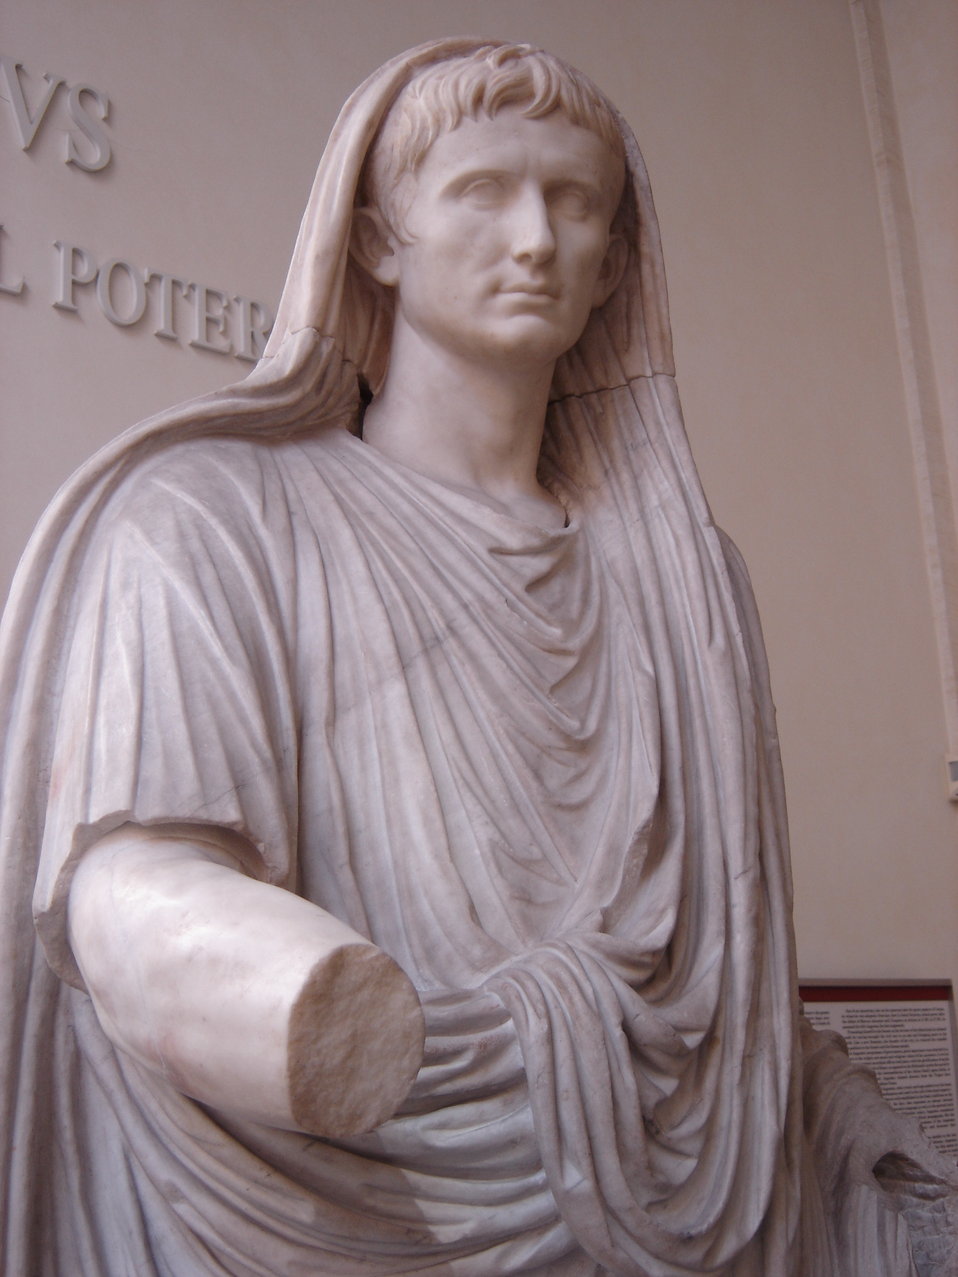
Took this photo myself. en:Category:Collections of the National Museum of Rome